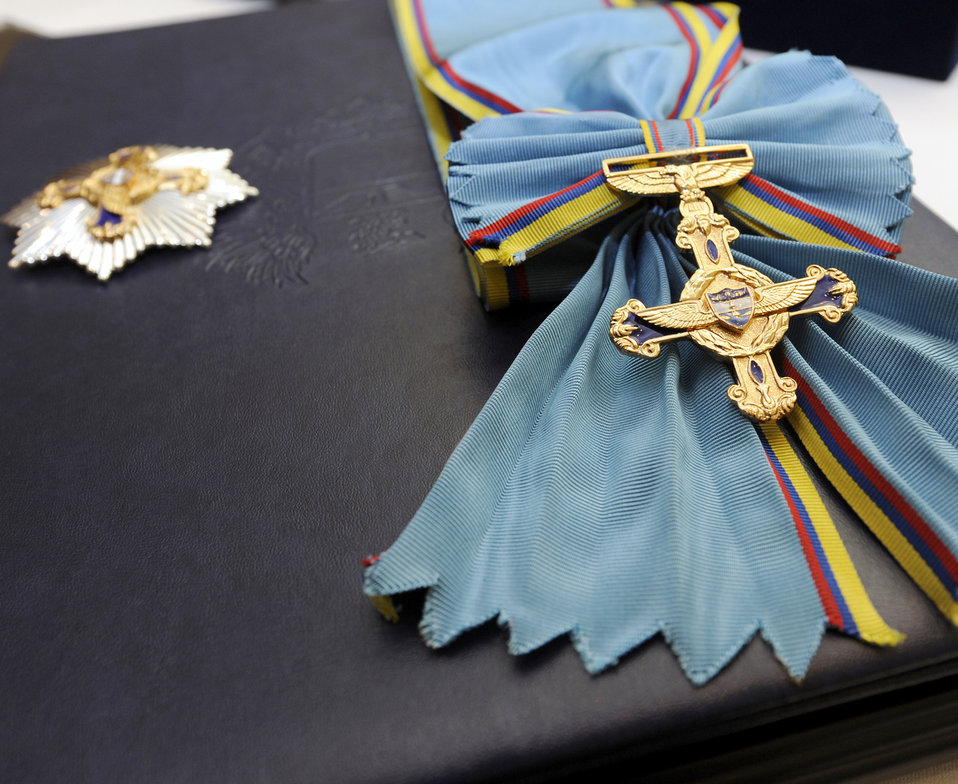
CONJEFAMER

The award of the